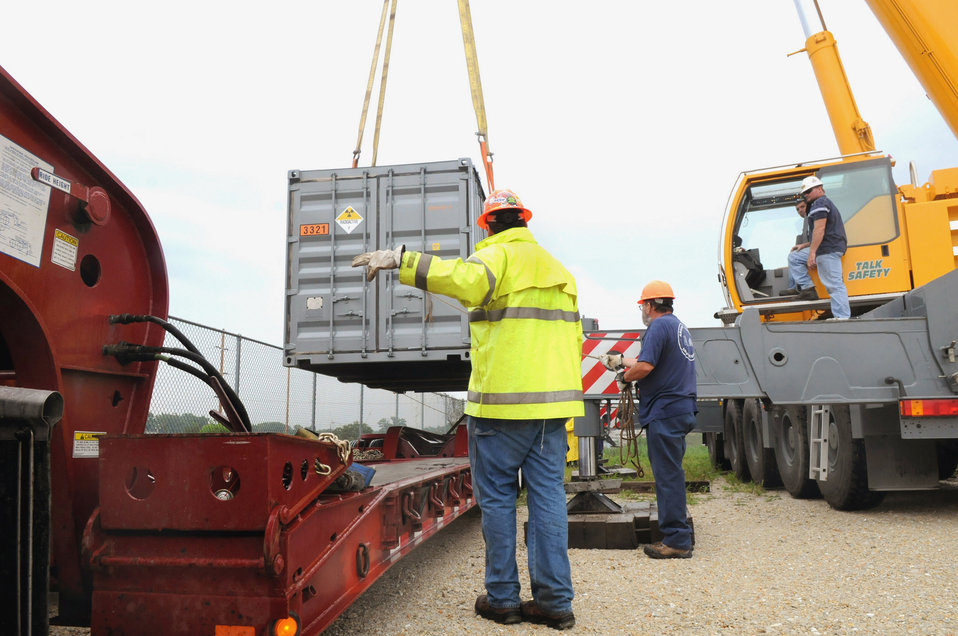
Argonne Recovery Act Workers Remove Waste, Demolish Cold War Legacy Buildings

Workers at Argonne National Laboratory prepare shipments of transuranic waste for disposal at the Waste Isolation Pilot Plant in New Mexico.